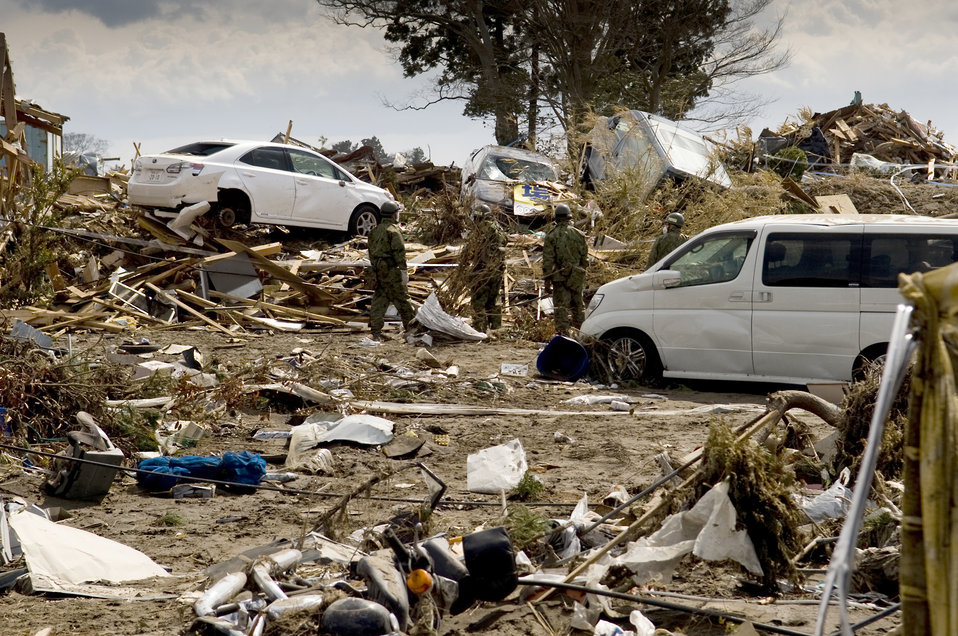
Airmen work with Japanese air controllers

The devastation can still be seen March 26, 2011, around Sendai Airport, Japan, more than two weeks after an earthquake and tsunami ravaged the region.